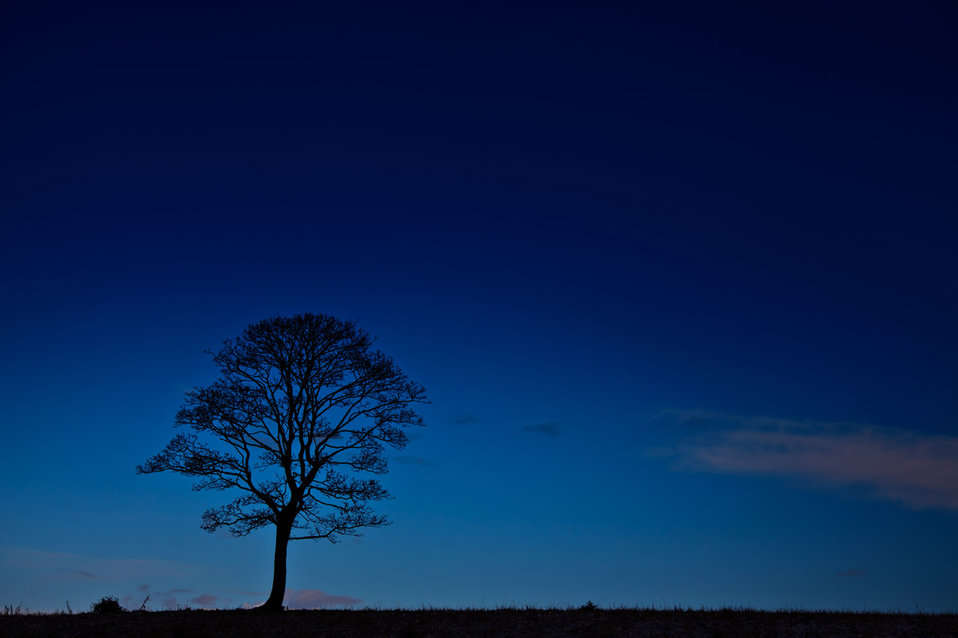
Tree silhouette at night

Tree silhouette on horizon at night.